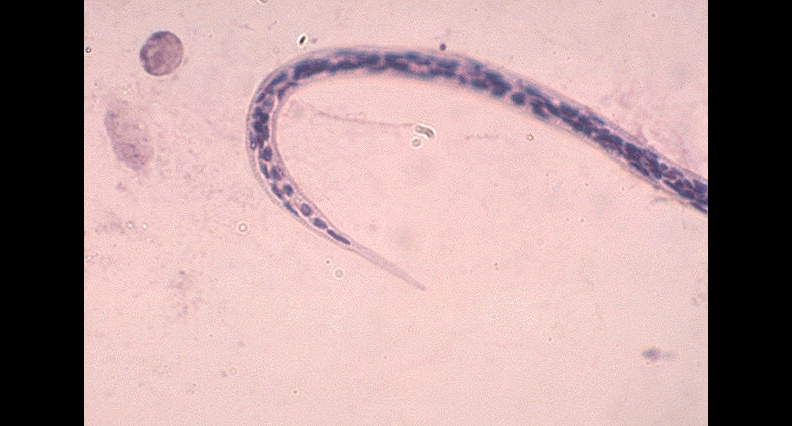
Onchocerca volvulus, posterior end.